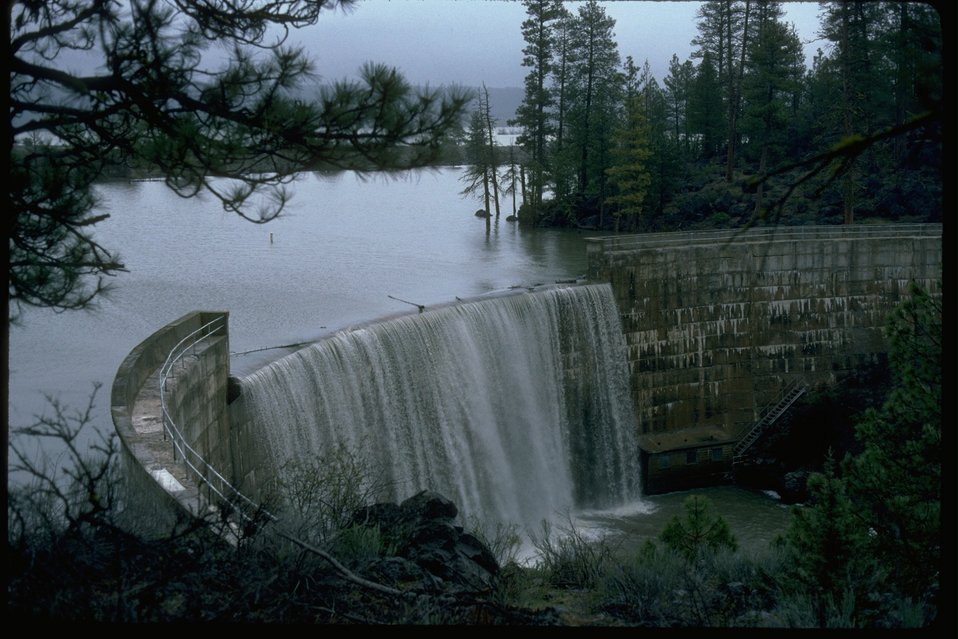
Dam at Gerber Reservoir.